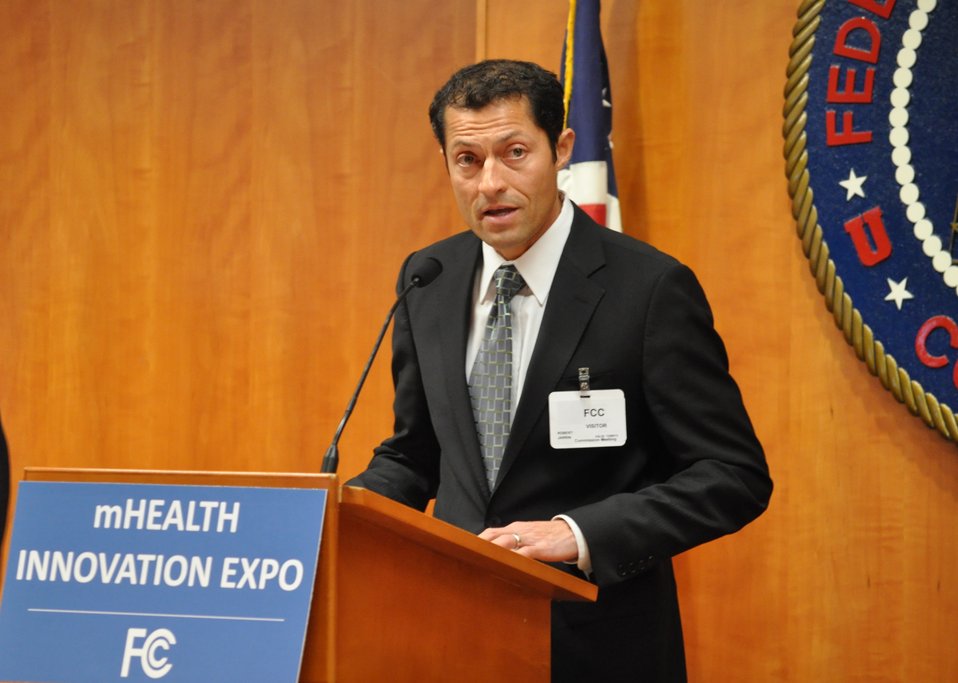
12.6.13 mHealth Innovation Expo

Robert Jarrin, Senior Director of Government Affairs, Qualcomm